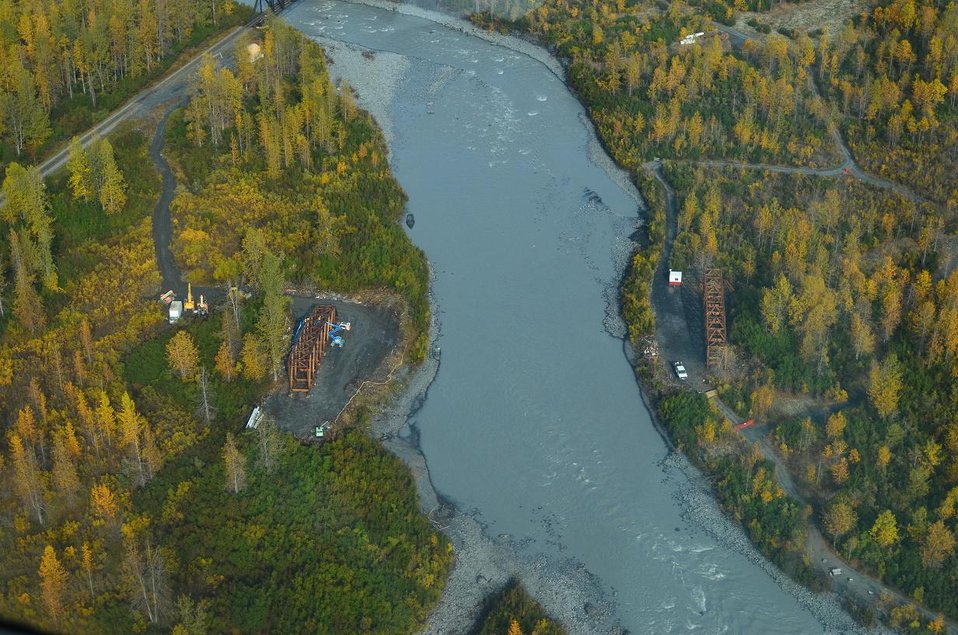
Placer Bridge

The Placer Bridge, over the Placer River in Alaska will measure 280 feet long and is scheduled for completion by mid-July.